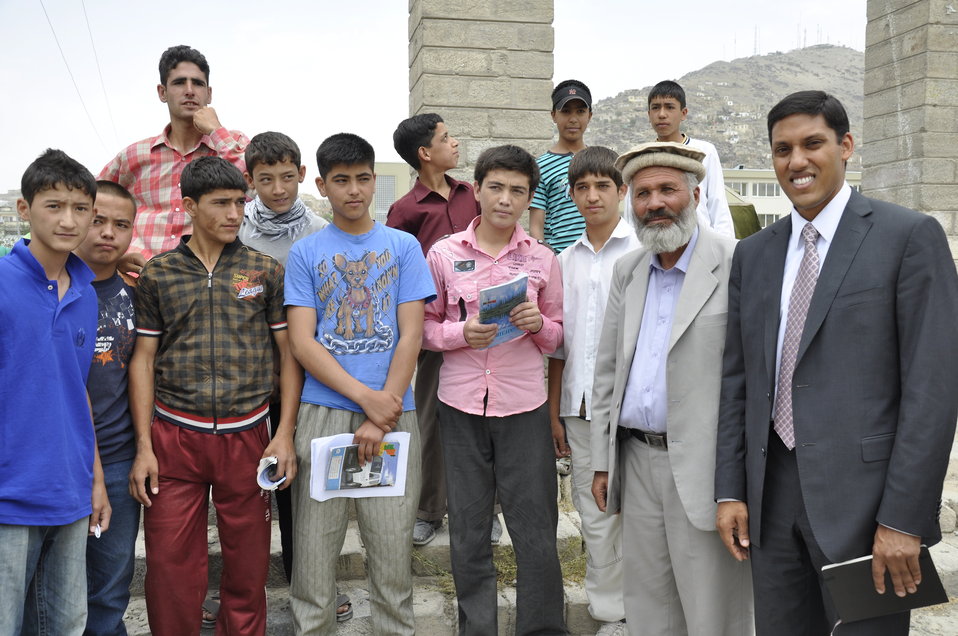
Ghazni High School in Kabul